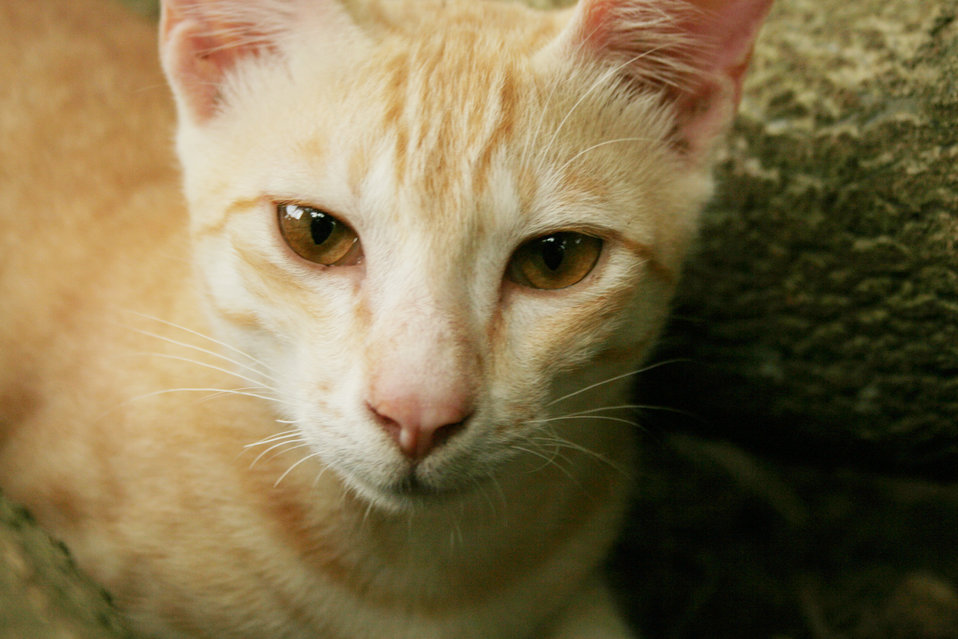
This work is dedicated to Public Domain